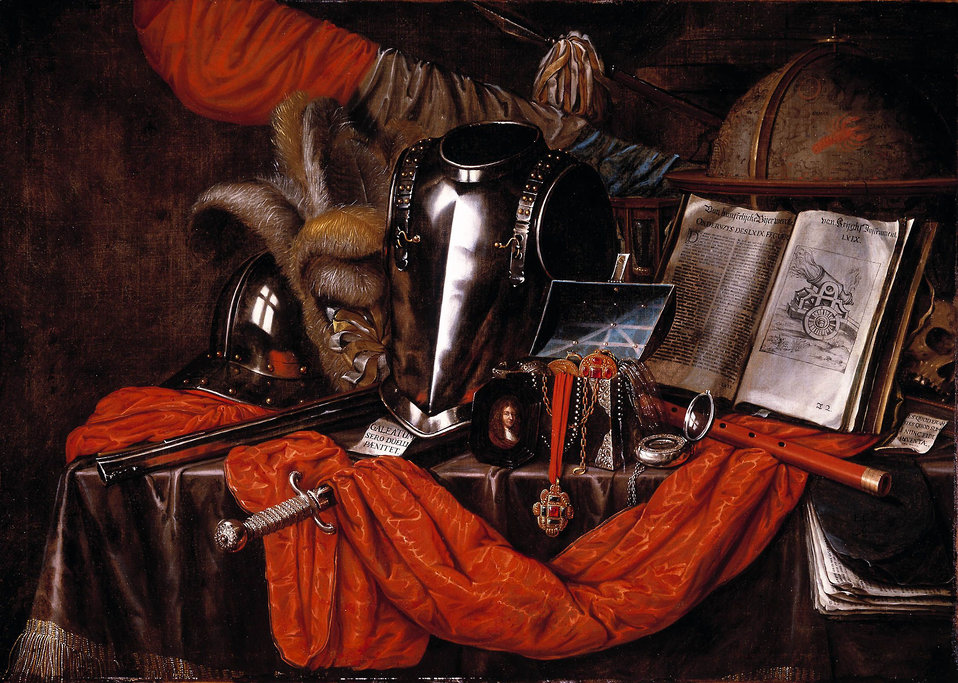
A Vanitas) by Edward Collier